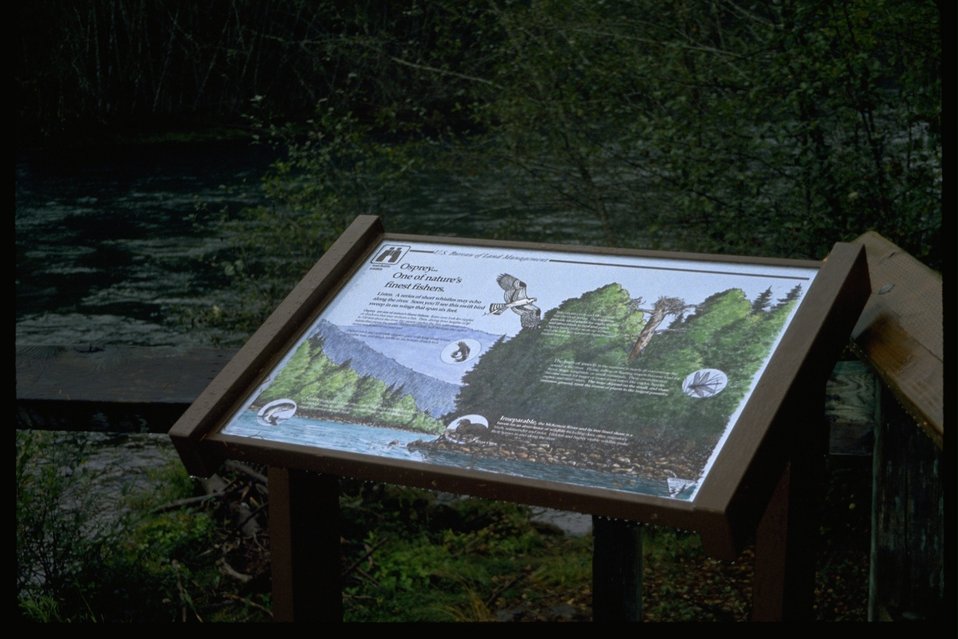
Close-up of interpretive panel near the McKensie River.